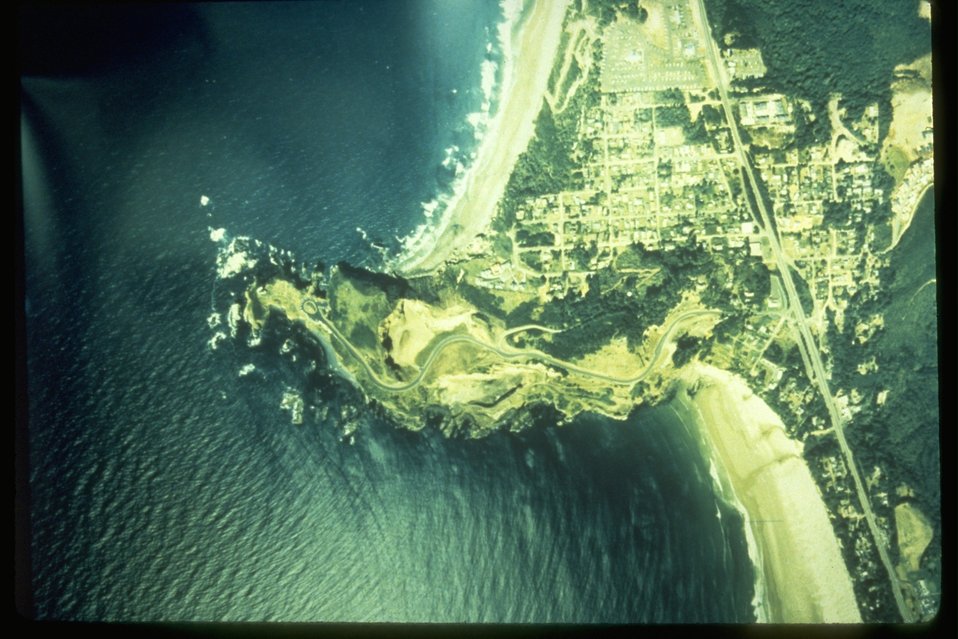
Aerial view of Headland at the Yaquina Head ONA.